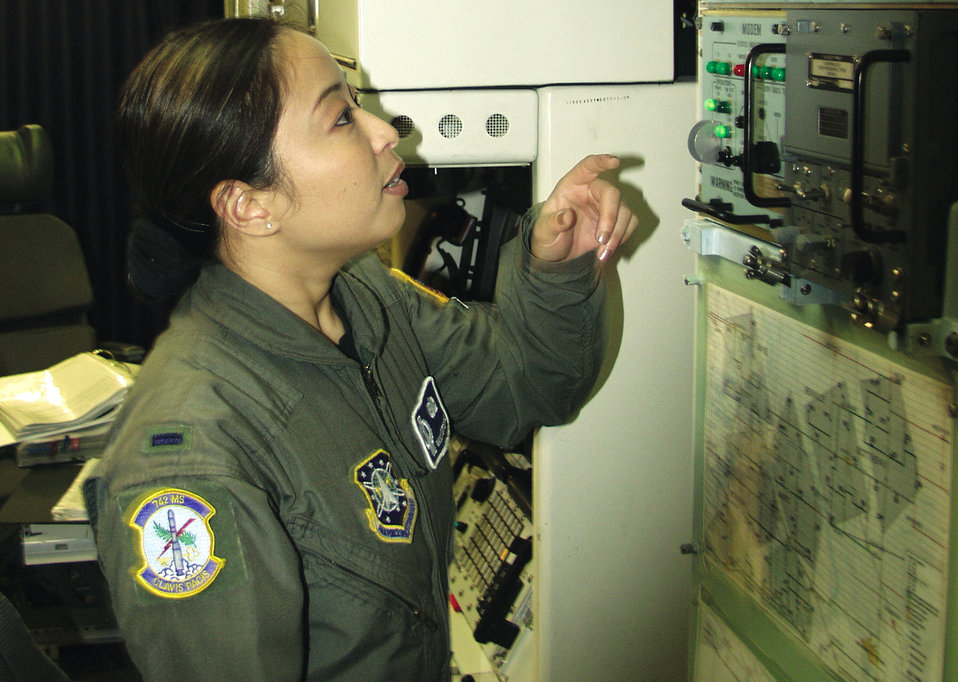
Alert team

GREAT PLAINS OF NORTH DAKOTA -- First Lt. Nancy Satterfield inspects the indicator lights ensuring they will turn on if there is a system malfunction here. She is assigned to the 742nd Missile Squadron at Minot Air Force Base, N.D.